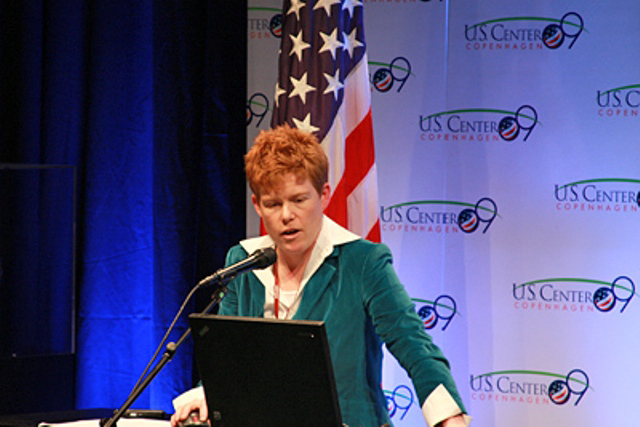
Advancing Carbon Sequestration Technology at COP-15

Holmes Hummel, Senior Policy Advisor for Policy & International Affairs at U.S. Department of Energy gives a presentation on advancing carbon sequestration technology at the U.S. Center at COP15, Bella Center, Copenhagen, Denmark on December 11, 2009.